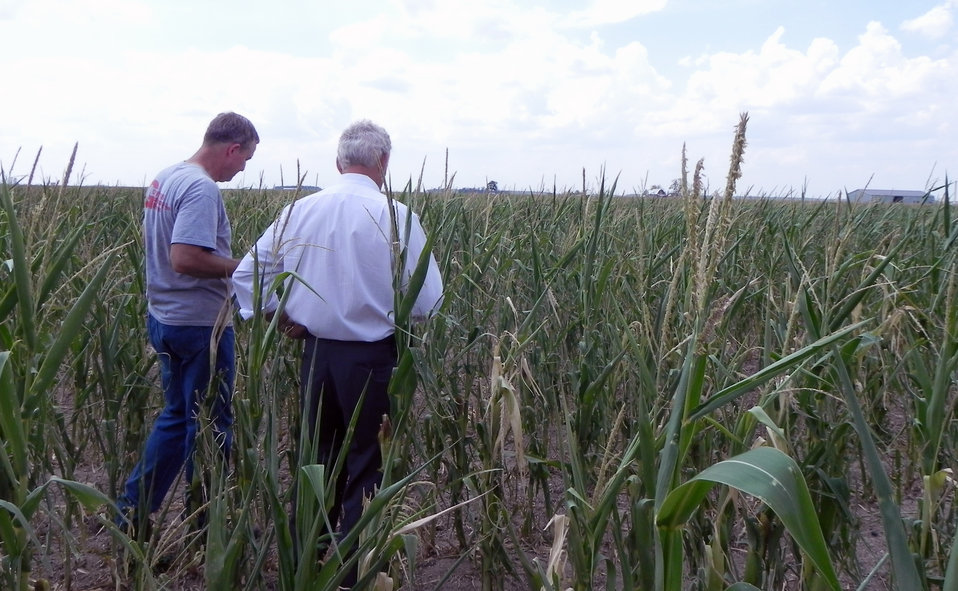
Agriculture Under Secretary for Farm and Foreign Agricultural Service (FFAS) Michael Scuse (right) tours a drought stricken corn field with Doug Goyings, on the Goyings farm in Paulding County, OH on Tuesday, July 17, 2012. Agriculture Secretary Vilsack has instructed Agriculture subcabinet leaders to travel to affected drought areas to augment ongoing assistance from state-level U.S. Department of Agriculture (USDA) staff and provide guidance on USDA’s new, streamlined disaster process. The U.S. Drought Monitor currently reports that 61 percent of the continental United States is in a moderate to exceptional drought.